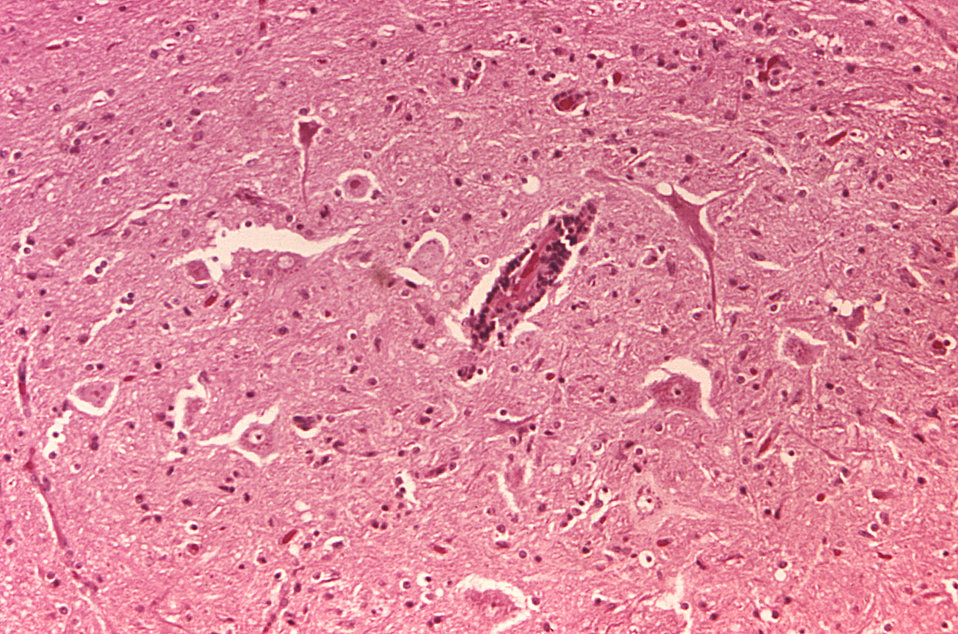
This micrograph depicts the histopathologic changes associated with rabies encephalitis prepared using an H&E stain.